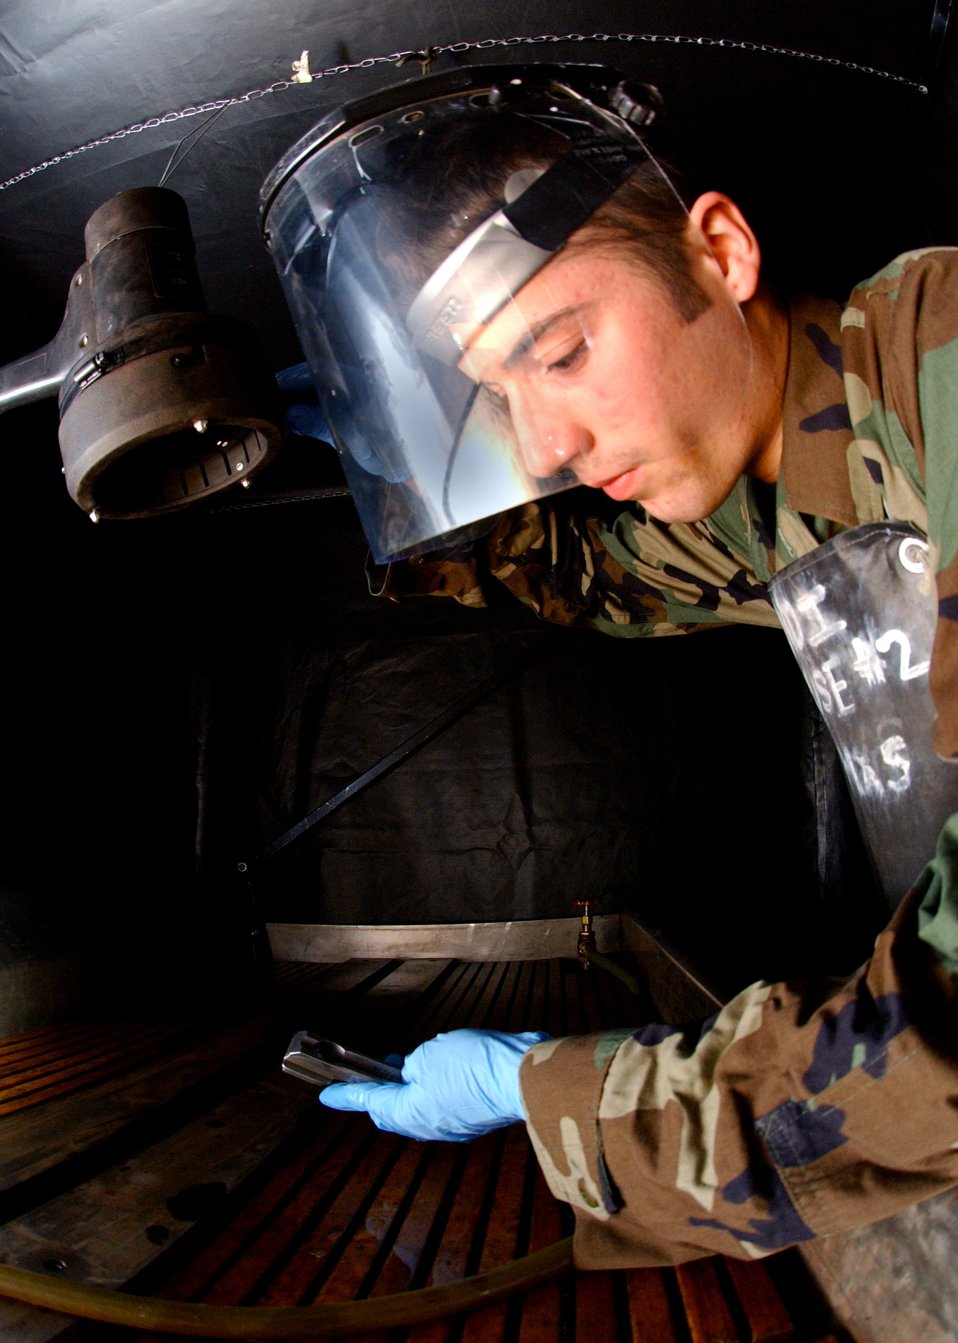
Non-destructive inspection

Airman Eric Palmer conducts a magnetic particle inspection at Royal Air Force Base Mildenhall, England, on Tuesday, June 20. Inspections are performed to check for cracks on magnetic engine parts. Airman Palmer is a non-destructive inspection specialist with the 100th Maintenance Squadron.